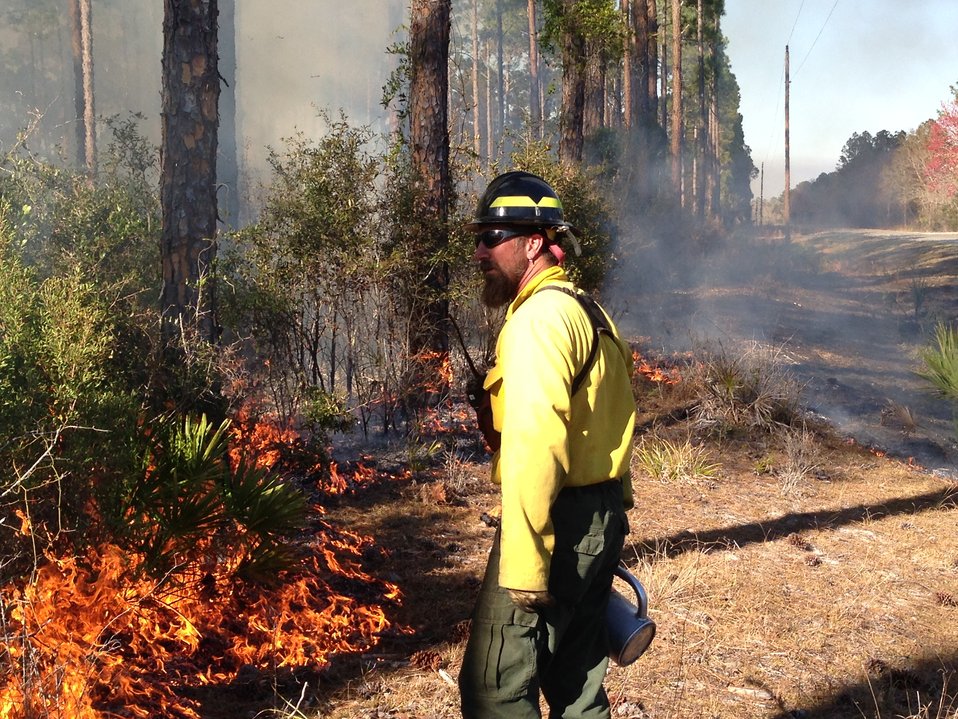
LSRFire20142

Lower Suwannee Firefighter George Pelt carefully igniting along a powerline.